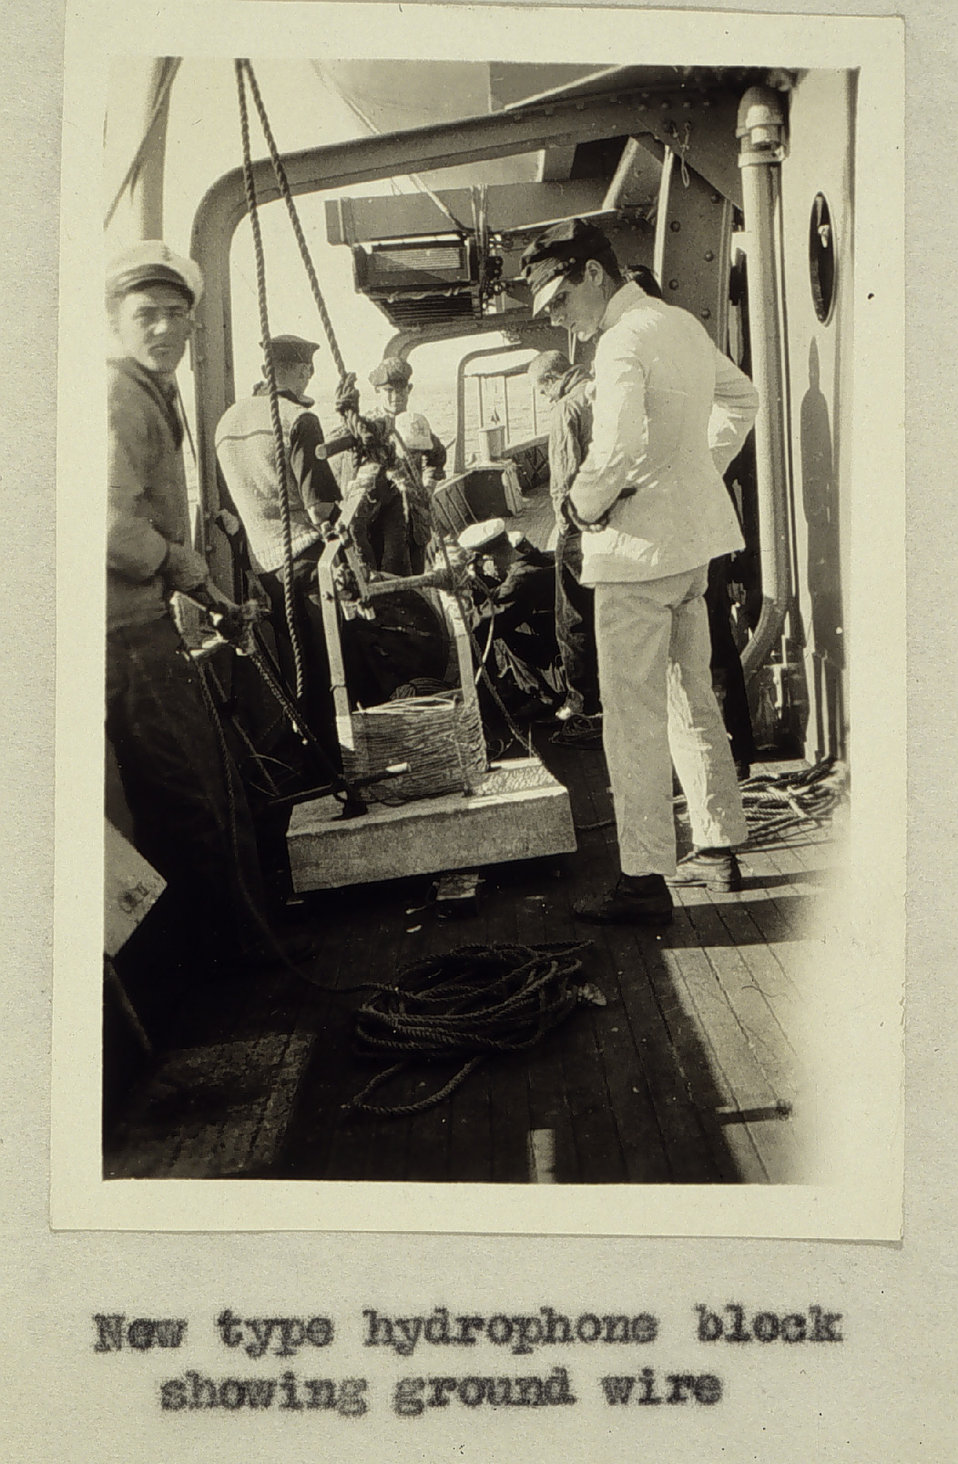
A new type of hydrophone block for Radio Acoustic Ranging. On the GUIDE